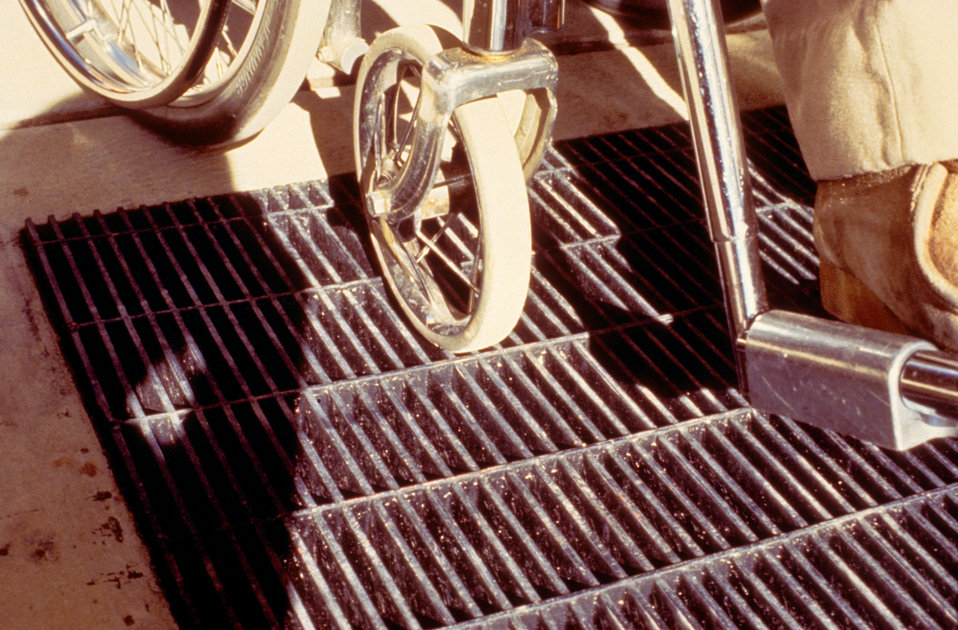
When compared to PHIL 9057, one can see that consideration was focused on satisfying requirements for all user groups, which included individuals wearing shoes, as well as people who would traverse the grate while seated in a wheelchair. The grate openings were no wider than one half an inch, thereby, preventing wheels from getting caught, as they were in PHIL 9057. The design also prevented crutch and cane tips from being trapped by the grate.